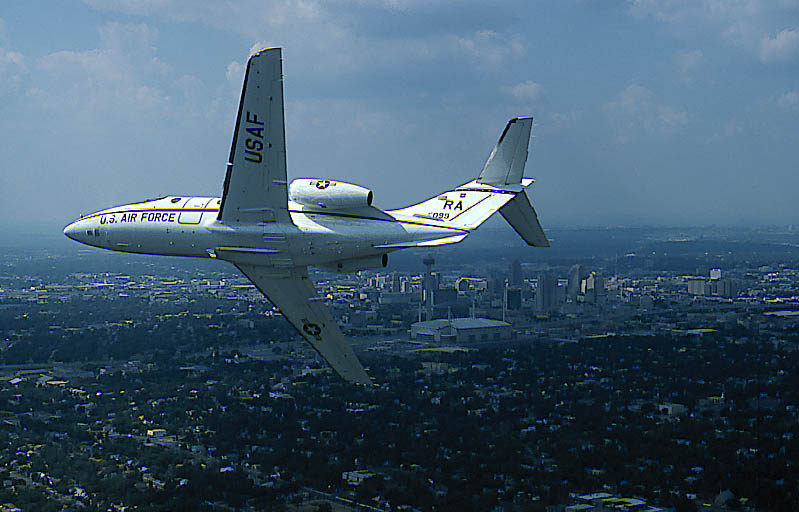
T-1A Jayhawk

FILE PHOTO -- The T-1A Jayhawk is a medium-range, twin-engine jet trainer. It is used by the U. S. Air Force's Air Education and Training Command to train student pilots to fly airlift or tanker aircraft. The swept wing T-1A is a version of the Beech 400A. It has cockpit seating for an instructor and two students and is powered by twin turbofan engines capable of an operating speed of Mach .78. The T-1A differs from its commercial counterpart with a single-point refueling system with greater capacity and increased bird strike protection in the windshield and leading edges for sustained low-level operation.